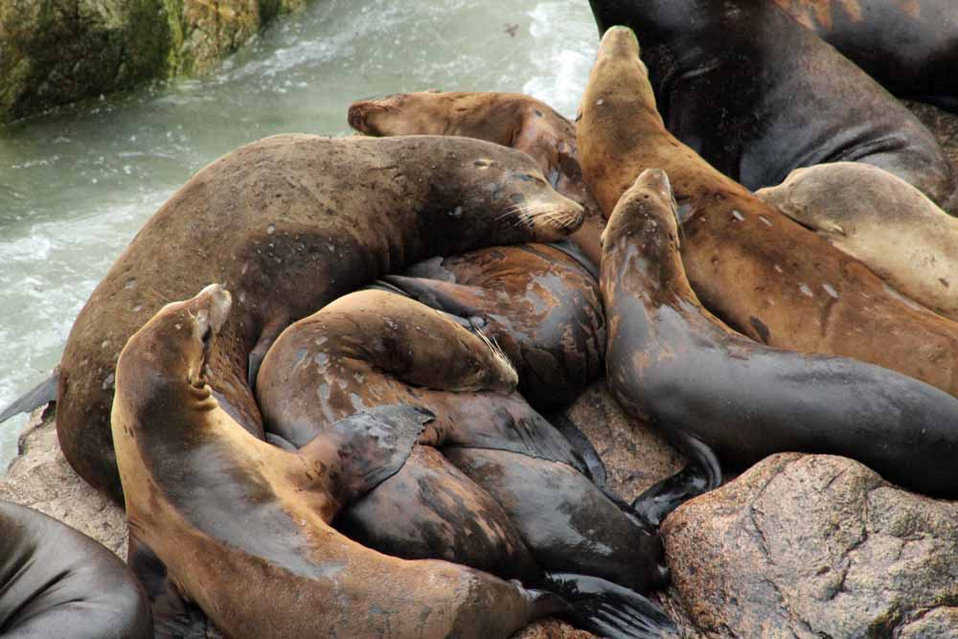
sea lion nursery

Farallon Islands National Wildlife Refuge, CA
Photo: Nikki Roach, USFWS
Just 27 miles from San Francisco's Golden Gate, the Farallon Islands were the site of egg wars between rival companies that, between them, collected up to 500,000 seabird eggs a month. In 1909 Pres. Teddy Roosevelt protected the northernmost islands in the chain as a refuge. Other islands were added in 1969 and in 1974, the Farallons became one of the first wildlife refuges Congressionally designated as wilderness.